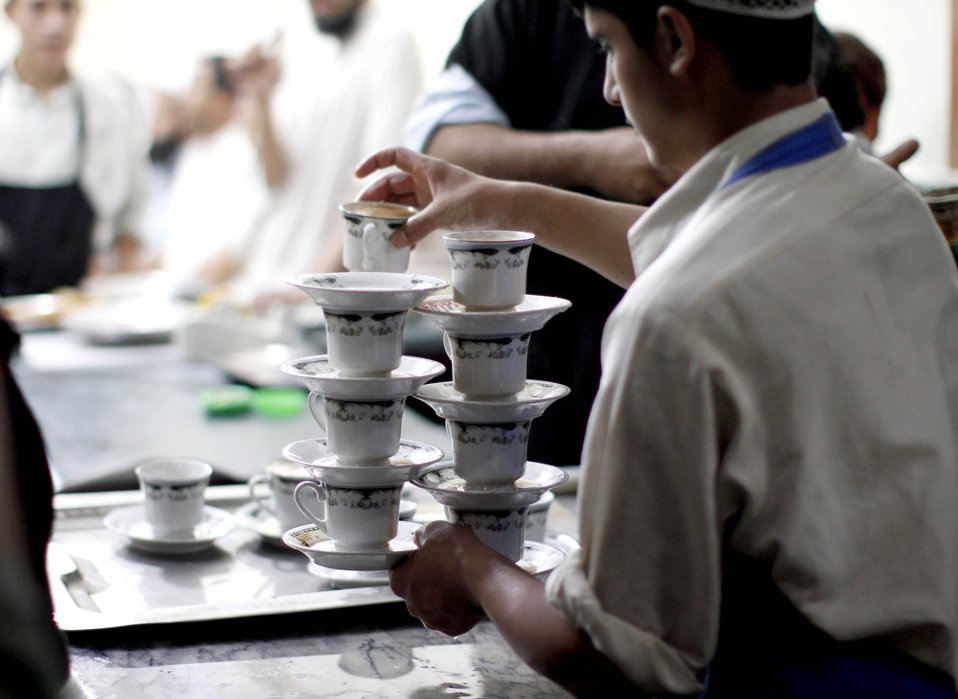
USAID helps rehabilitate hotels and fish farms in battered Swat Valley - 5

Through a comprehensive media campaign, USAID is working to attract tourists to Swat to increase hotel revenues, restore the livelihoods of thousands of families, and give a much-needed boost to the area’s ravaged economy.